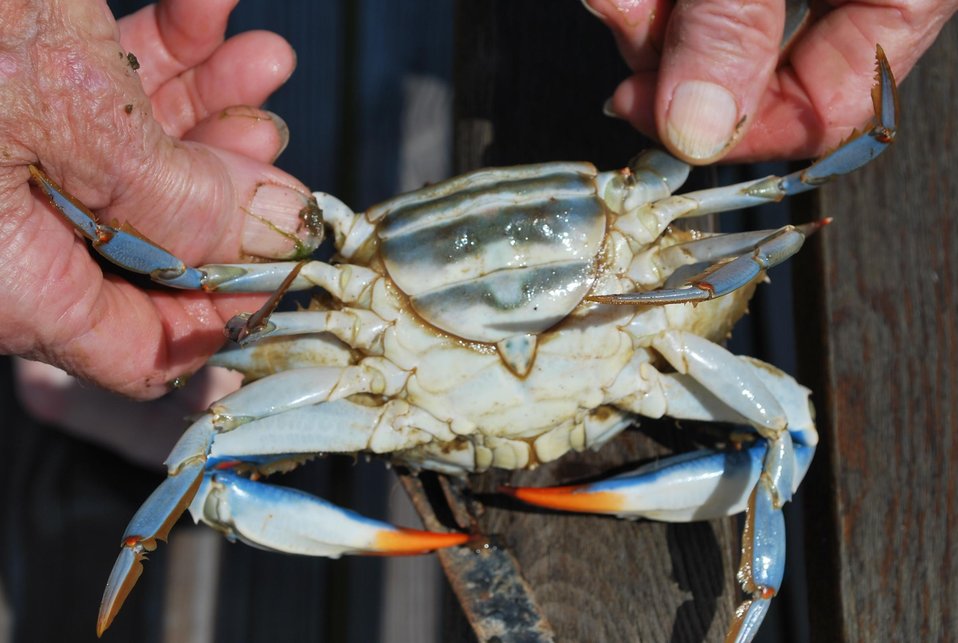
Underside of adult female blue crab, called sook by watermen. Note also red-tipped claws. Both design of underbody and color of claws differentiate male blue crab from female blue crab.